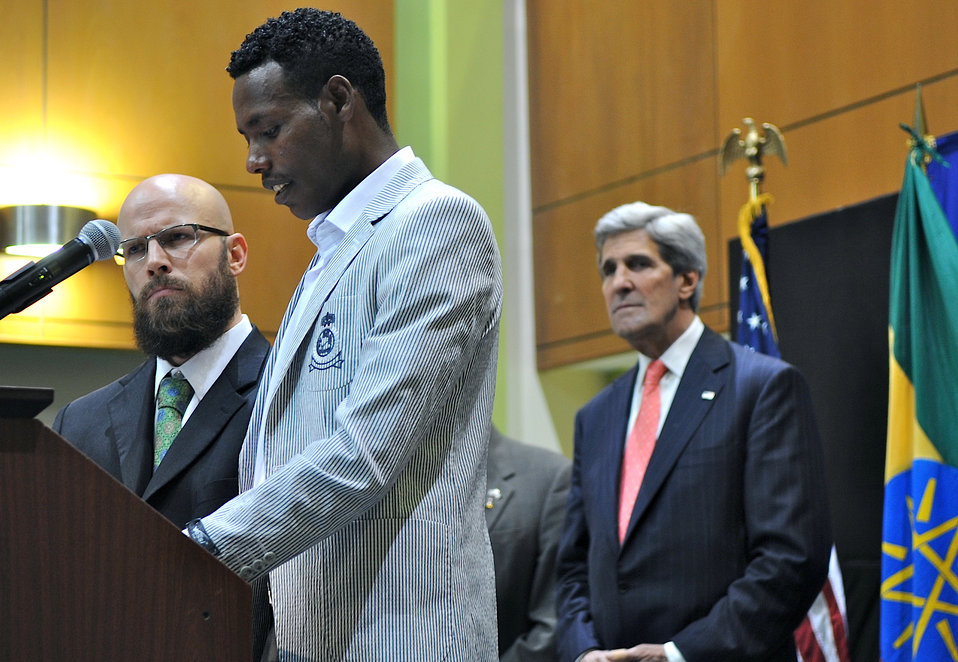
Boston Marathon Winner Announces He Will Return His Medal in a Salute to the Bombing Victims

U.S. Secretary of State John Kerry listens as Boston Marathon winner Lelisa Desisa announces he will return his medal in honor of the marathon bombing victims, during a ceremony at the U.S. Embassy in Addis Ababa, Ethiopia, on May 26, 2013.